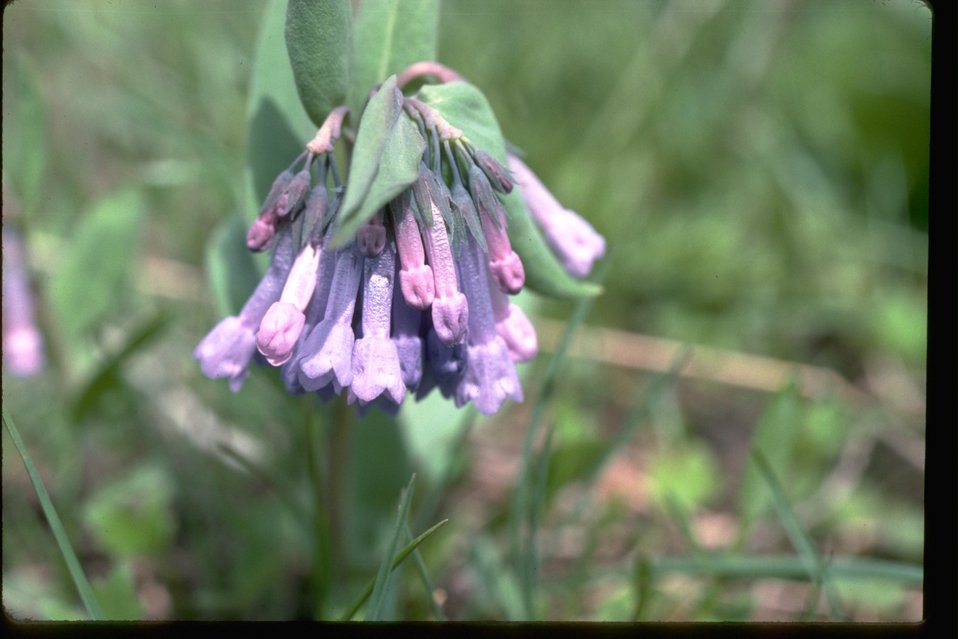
Small Bells wildflower from the Borage family. Its Botanical name is Mertensia longiflora from the Boraginaceae family. Flowering Season: April-May.